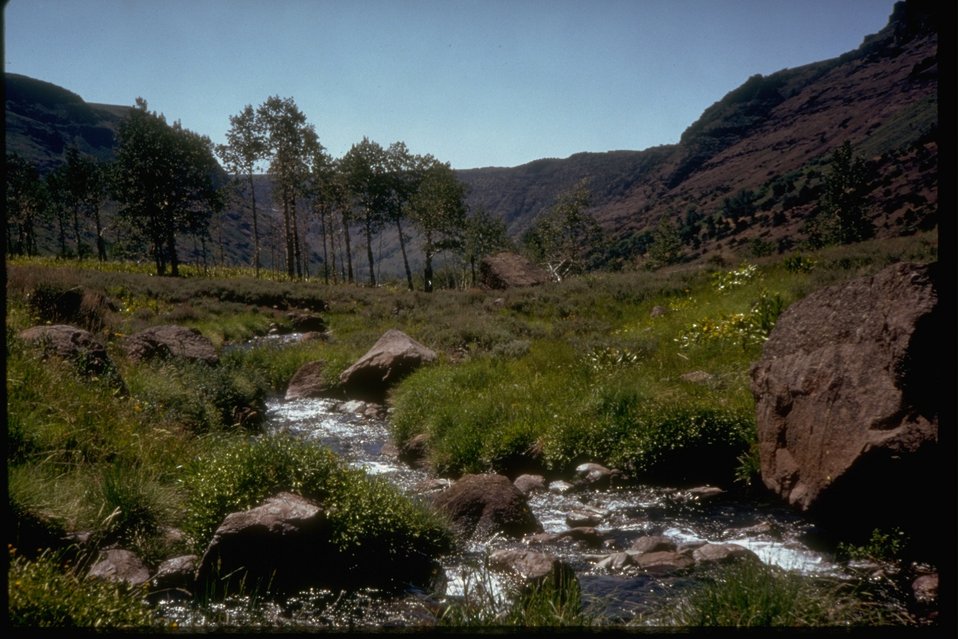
A scenic picture of a stream in one of the gorges.